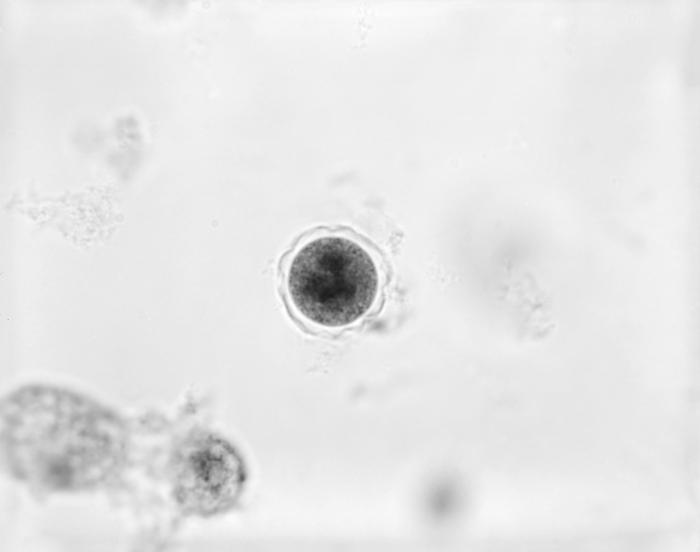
Magnified 1200X, and using a trichrome stain, this 1973 photomicrograph depicted a Hartmannella veriformis protozoan cyst. Note that this cyst is encased in a double-walled membrane, which consists of an inner, 'endocyst', and an outer-walled 'ectocyst'. The endocyst is intimately associated with the plasma membrane, while there is a distinct space between the endo- and outer, ectocyst membrances.